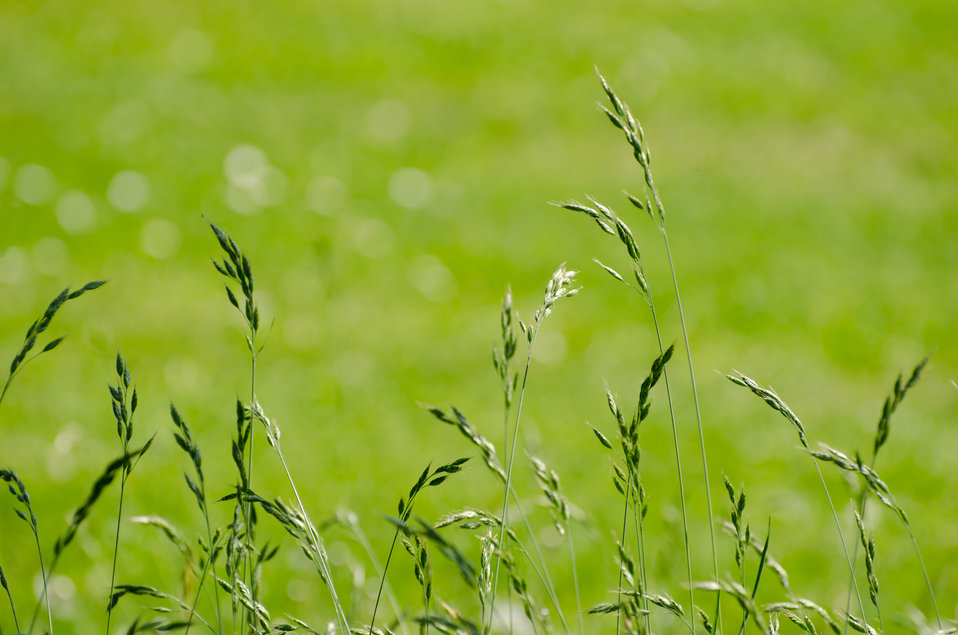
Plant

Green plant on the green background.